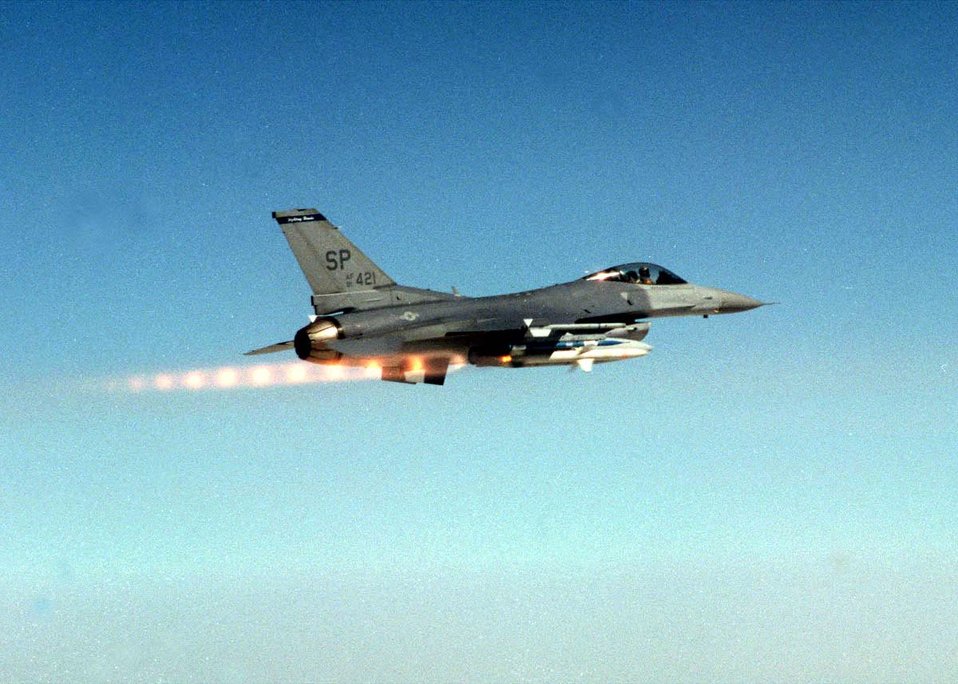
F-16 Fighting Falcon

FILE PHOTO -- The F-16 Fighting Falcon is a compact, multi-role fighter aircraft. It is highly maneuverable and has proven itself in air-to-air combat and air-to-surface attack. It provides a relatively low-cost, high-performance weapon system for the United States and allied nations.